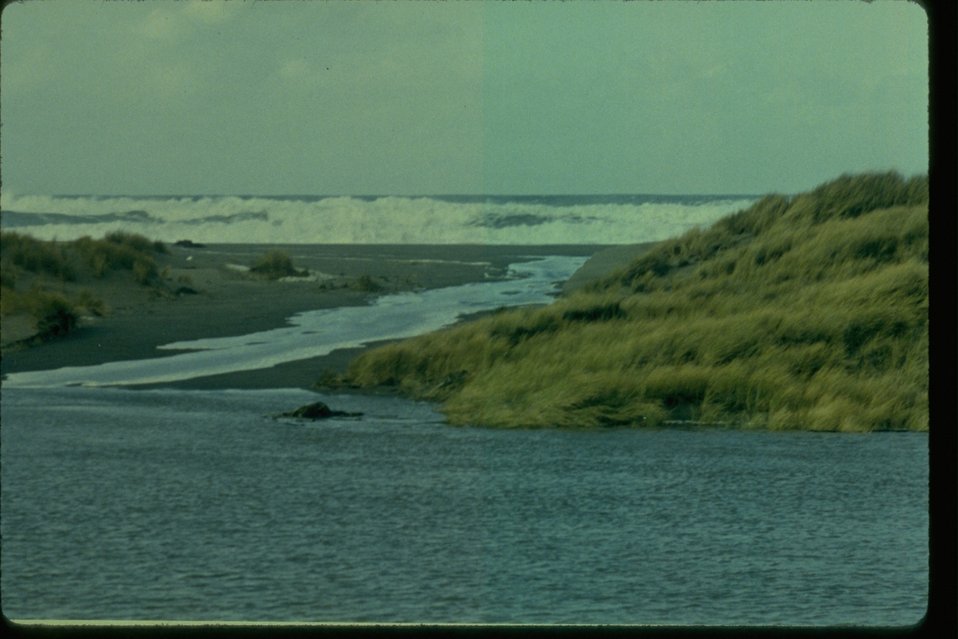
Breaching at New River.